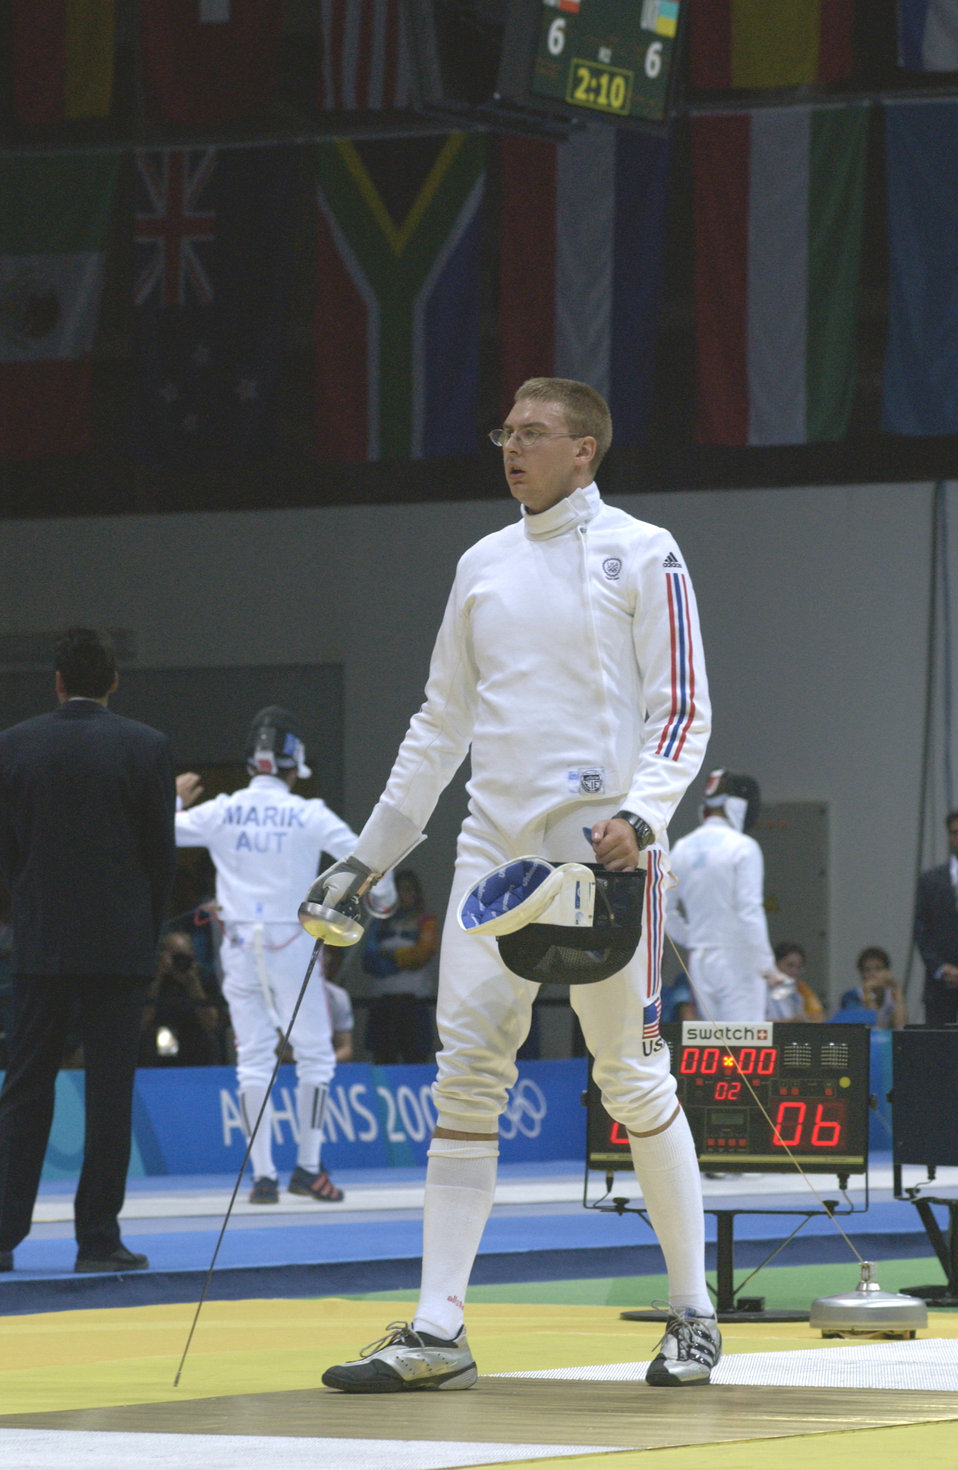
De-fenced

ATHENS, Greece -- Second Lt. Weston Seth prepares for his second-round match in the Olympic Men's Individual Epee event at Helliniko Fencing Hall near here Aug. 17. He is a member of the Air Force world-class athlete program.